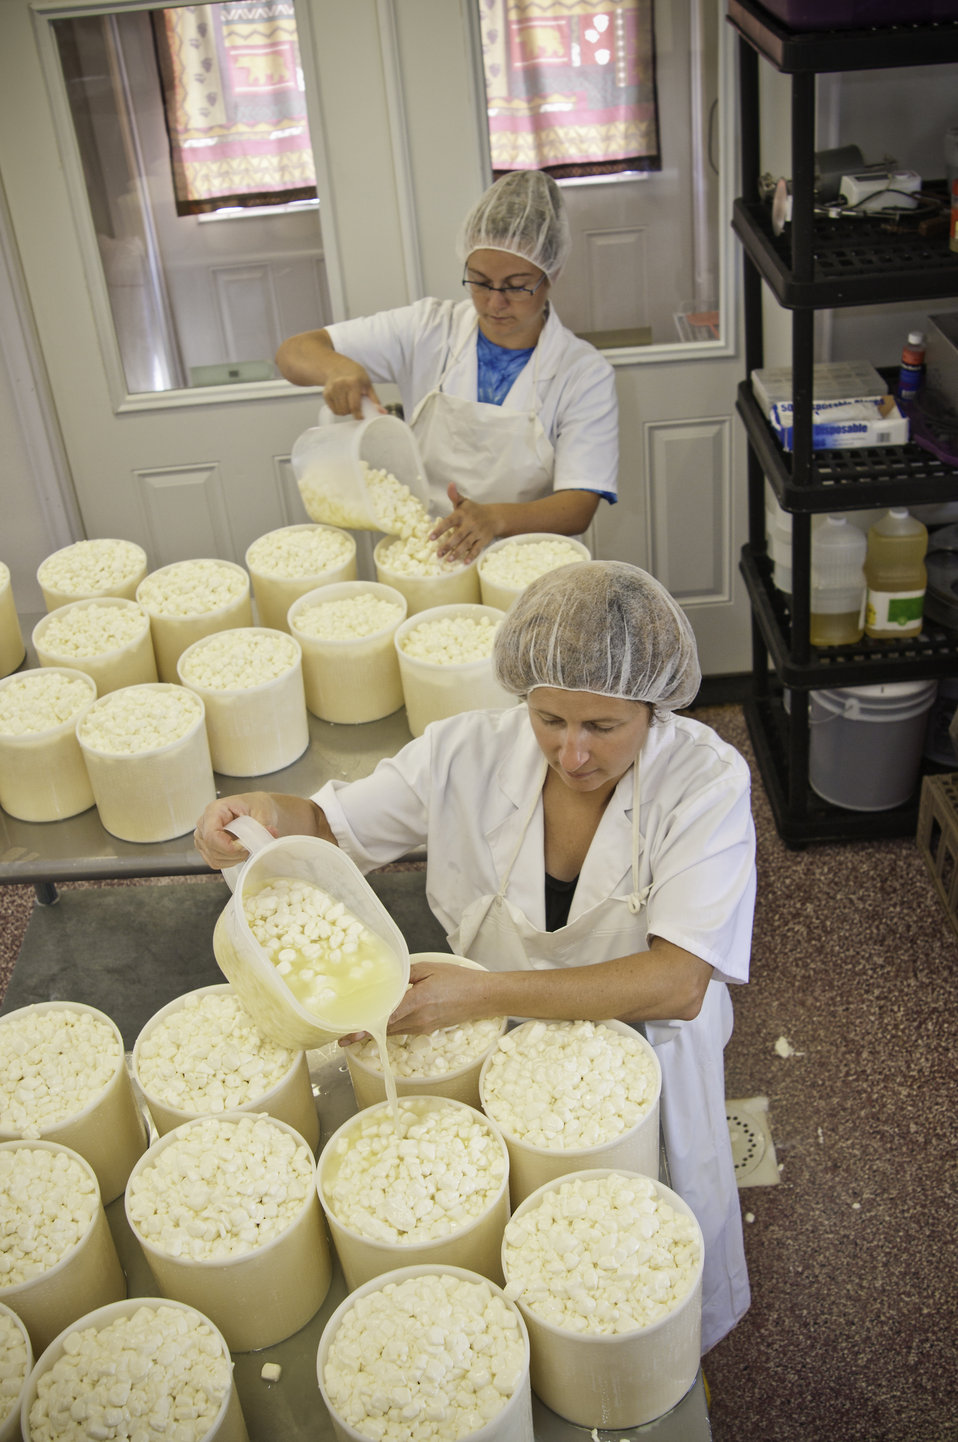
Chapel’s Country Creamery farm manager Courtney Biggs and Chapel’s Country Creamery owner Holly Foster in Easton, MD pour milk curd of fresh raw milk after the milk curd has expelled the whey in the cutting process into cheese hoops called the hooping process. The curds drain in the cheese hoops for 24 hours being turned during the process until the whey has drained. Then the cheese is taken to the aging room to cure. The dairy uses fresh raw milk 12-24 hours old. The milk is all-natural and contains no synthetic hormones, antibiotics, or chemical compounds. The 1150 pounds of milk in the vat will be used to make the dairy’s “Bay Blue” Cheese.